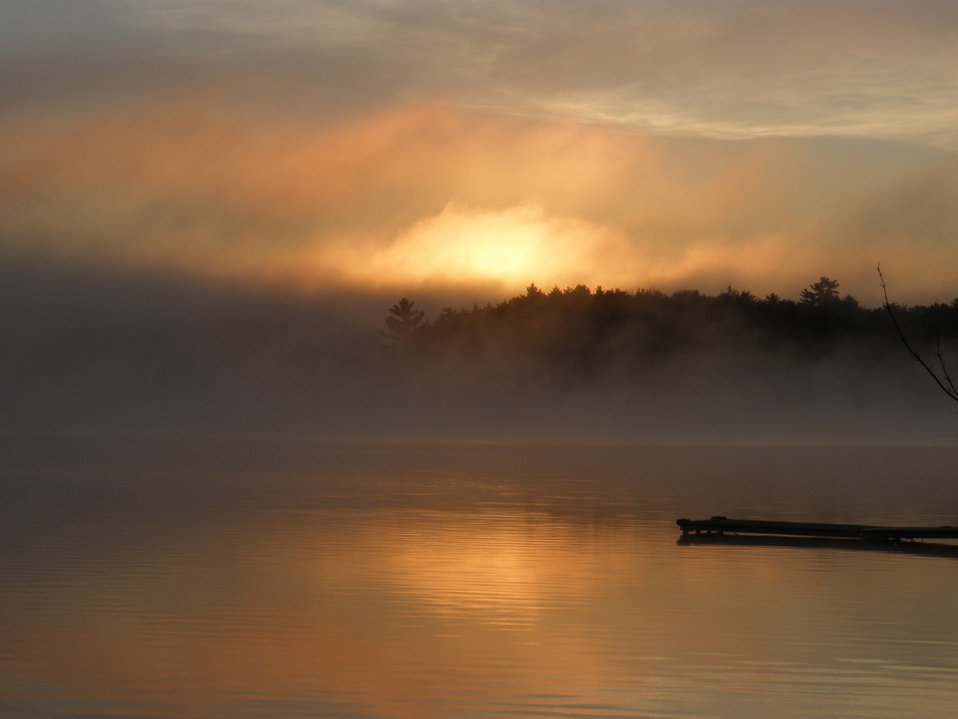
Sunrise over Quaker Lake in Salamanca, NY.